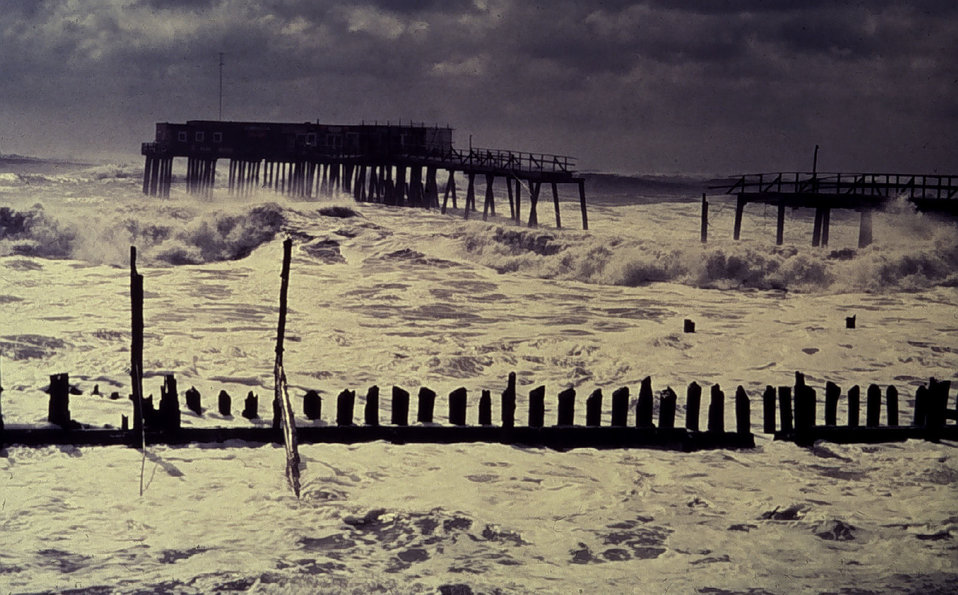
Stormy seas on the east coast. Pier has been broken in half